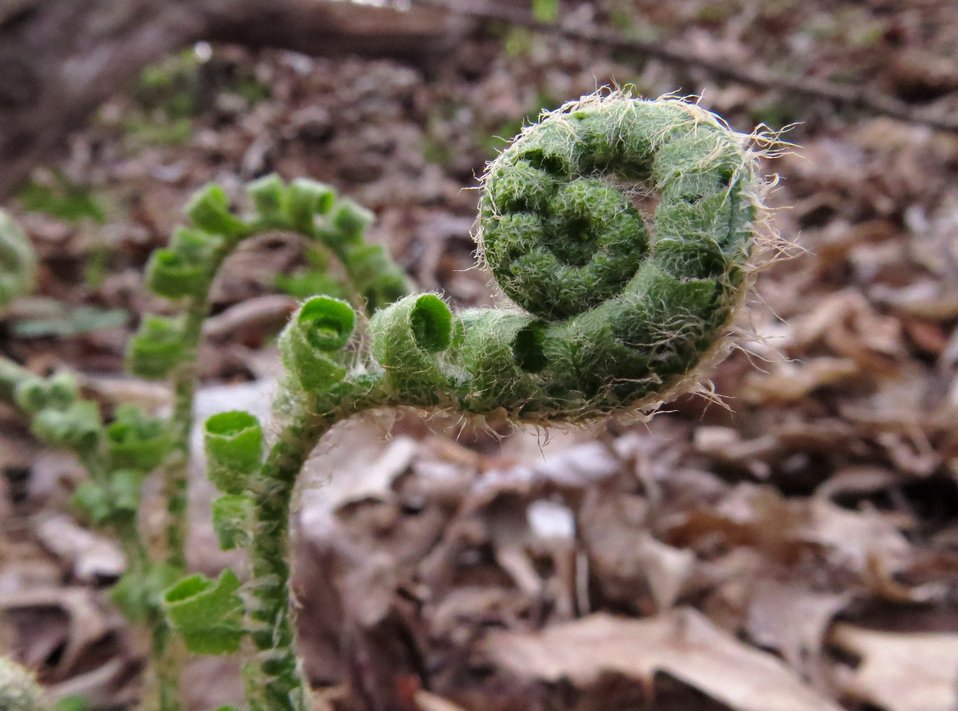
Fiddlehead